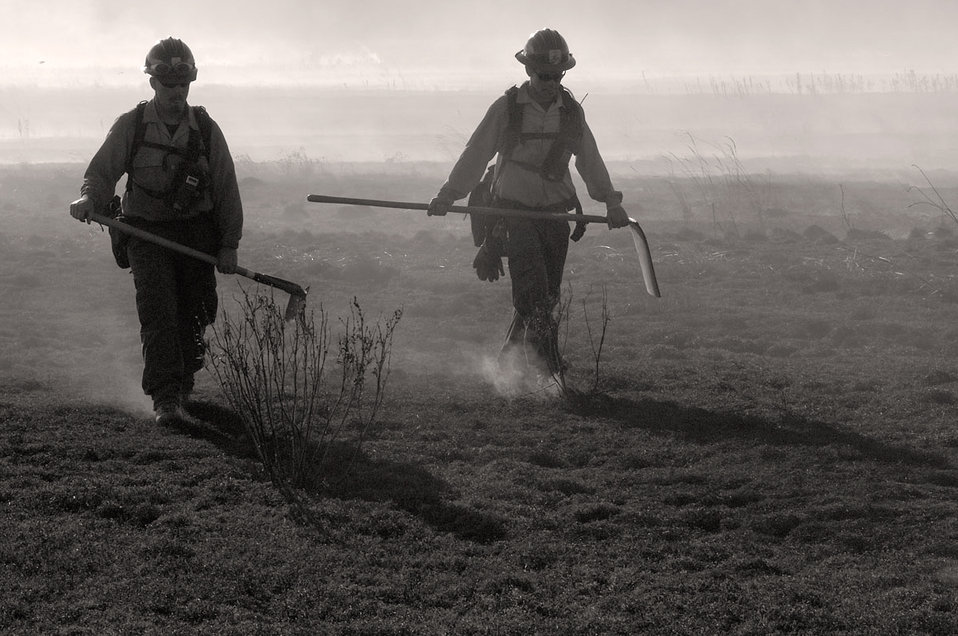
Frank Connor and Mike Solheim

Frank Connor (right), Prescribed Fire Technician in Region 1, Willamette Valley NWRC, Corvallis, Oregon, Frank served in the United States Army from 1990 to 1993.